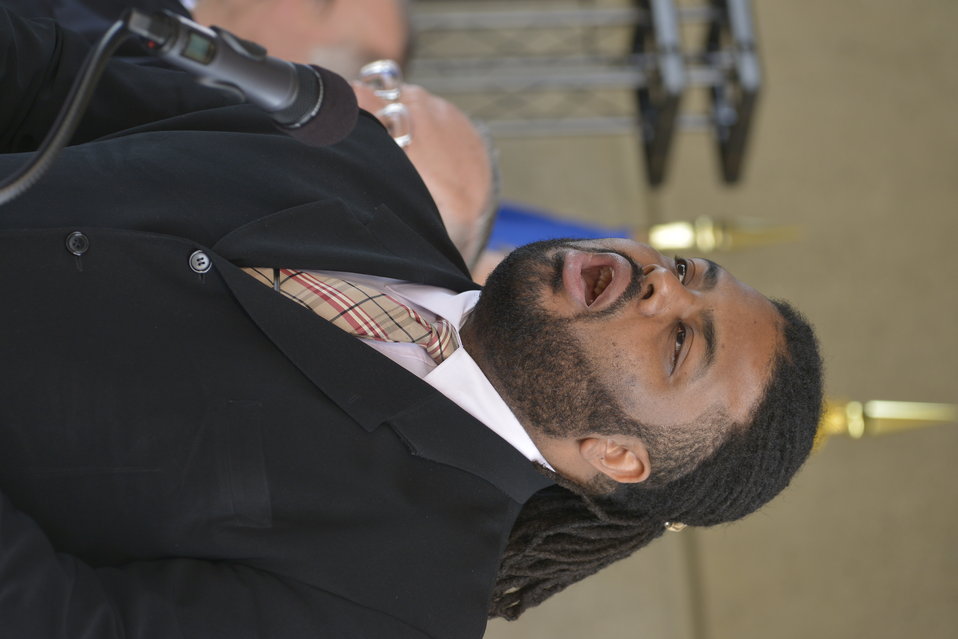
U.S Postal Services introduces a new Global: Sea Surface temperatures forever stamp at the Earth Day program at Department of Energy on April 22, 2014. ( T.Day, C.Williams, C.Anderson II, J.Colin Ph.D, Dr. K. Sullivan, K.Tobin Ph.D, W. Gicher Jr)